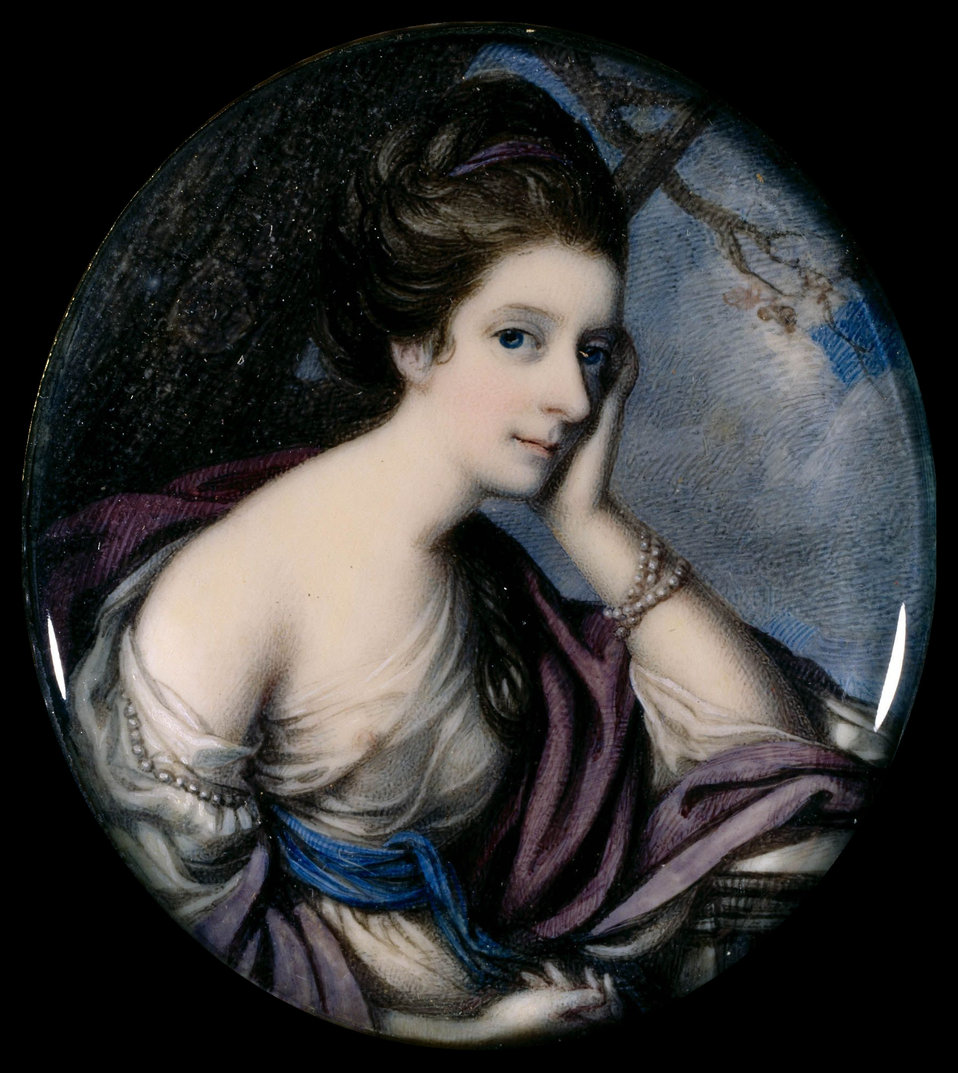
Mrs. Floyd by Richard Cosway, RA